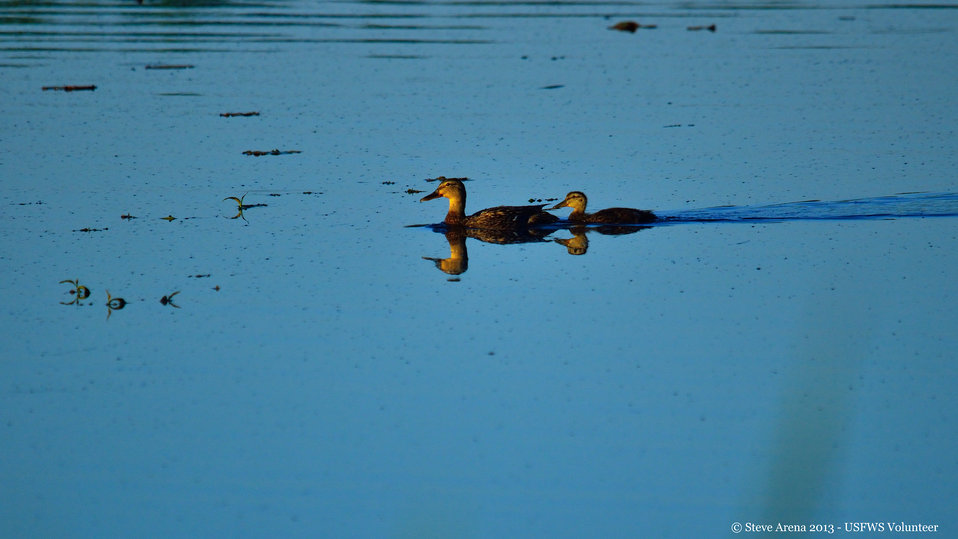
Mallard (Anas platyrhynchos) - female with chick

Great Meadows National Wildlife Refuge, Concord, MA

Credit: Steve Arena/USFWS

09 June 2013